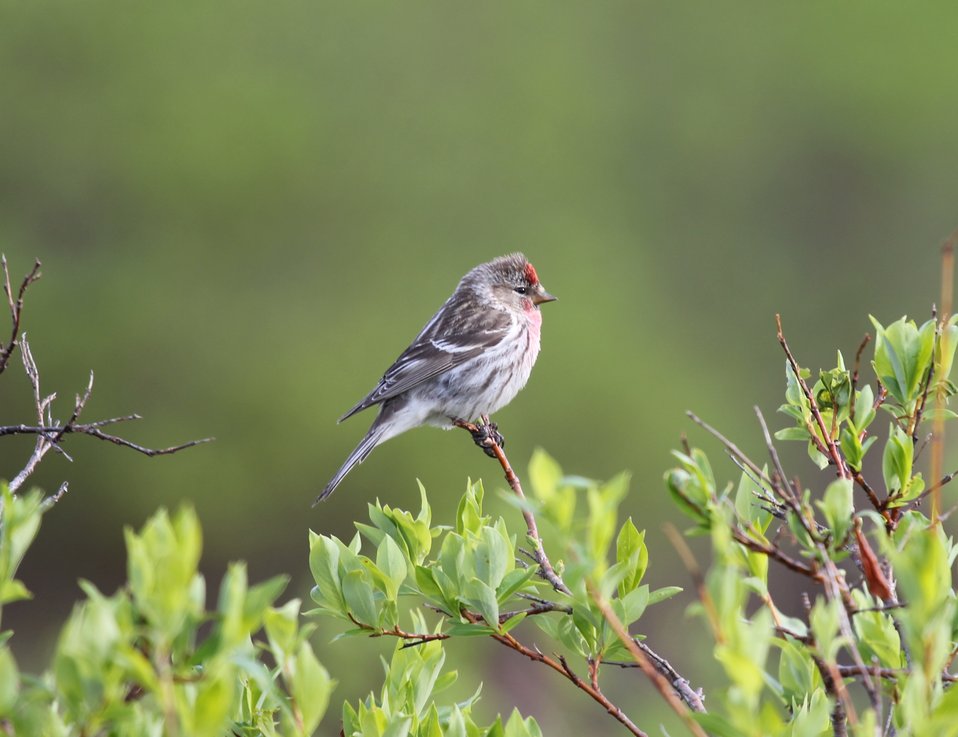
Redpoll

Andreafsky wilderness, Yukon Delta National Wildlife Refuge